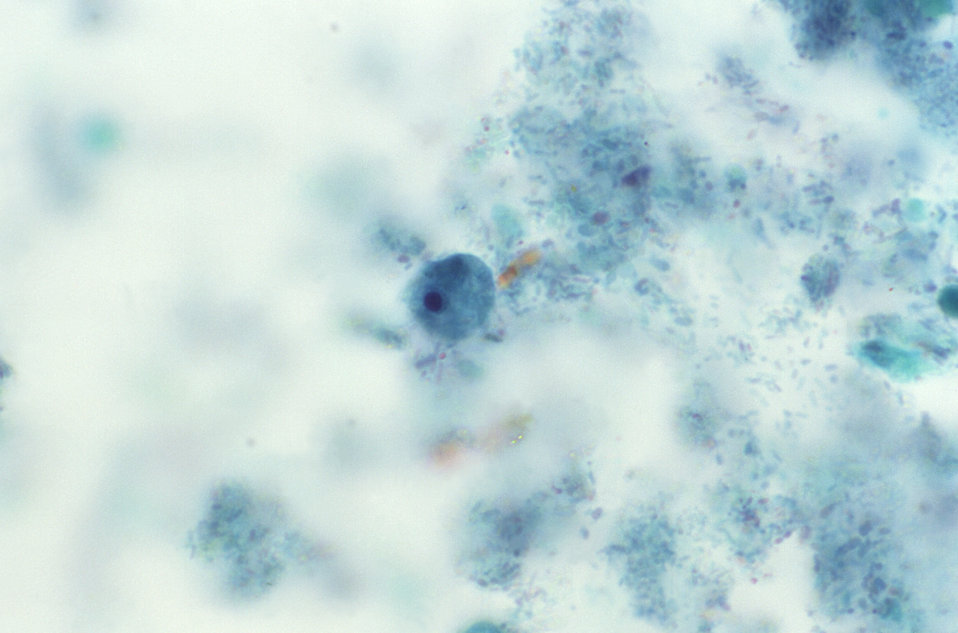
This trichrome-stained photomicrograph revealed the presence of a parasitic Iodamoeba b�ii trophozoite, which contained achromatic granules within its cytoplasm.